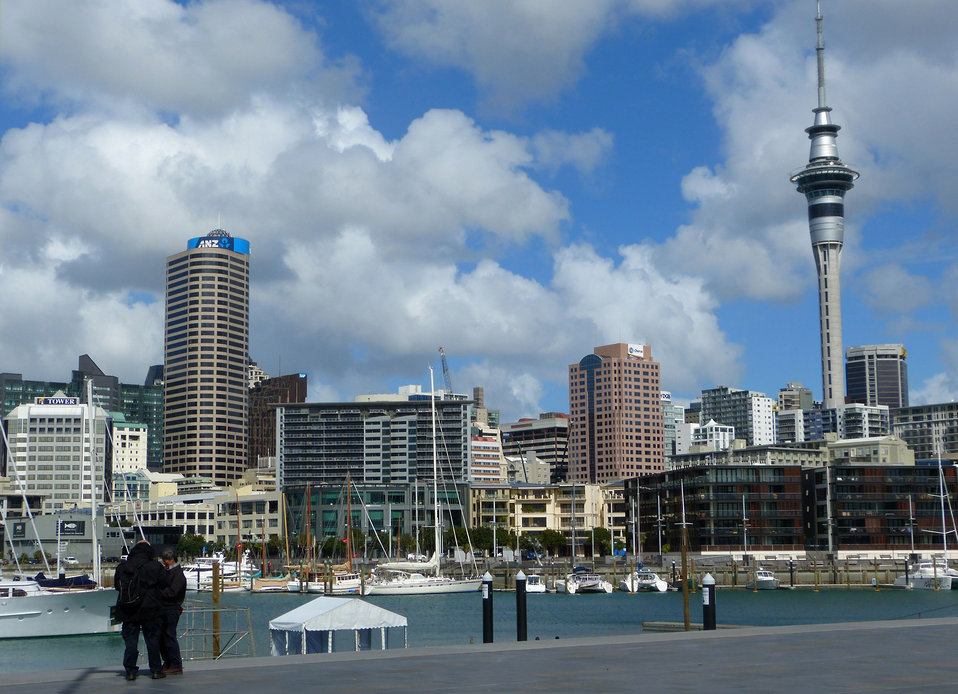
Auckland main city of new zealand.